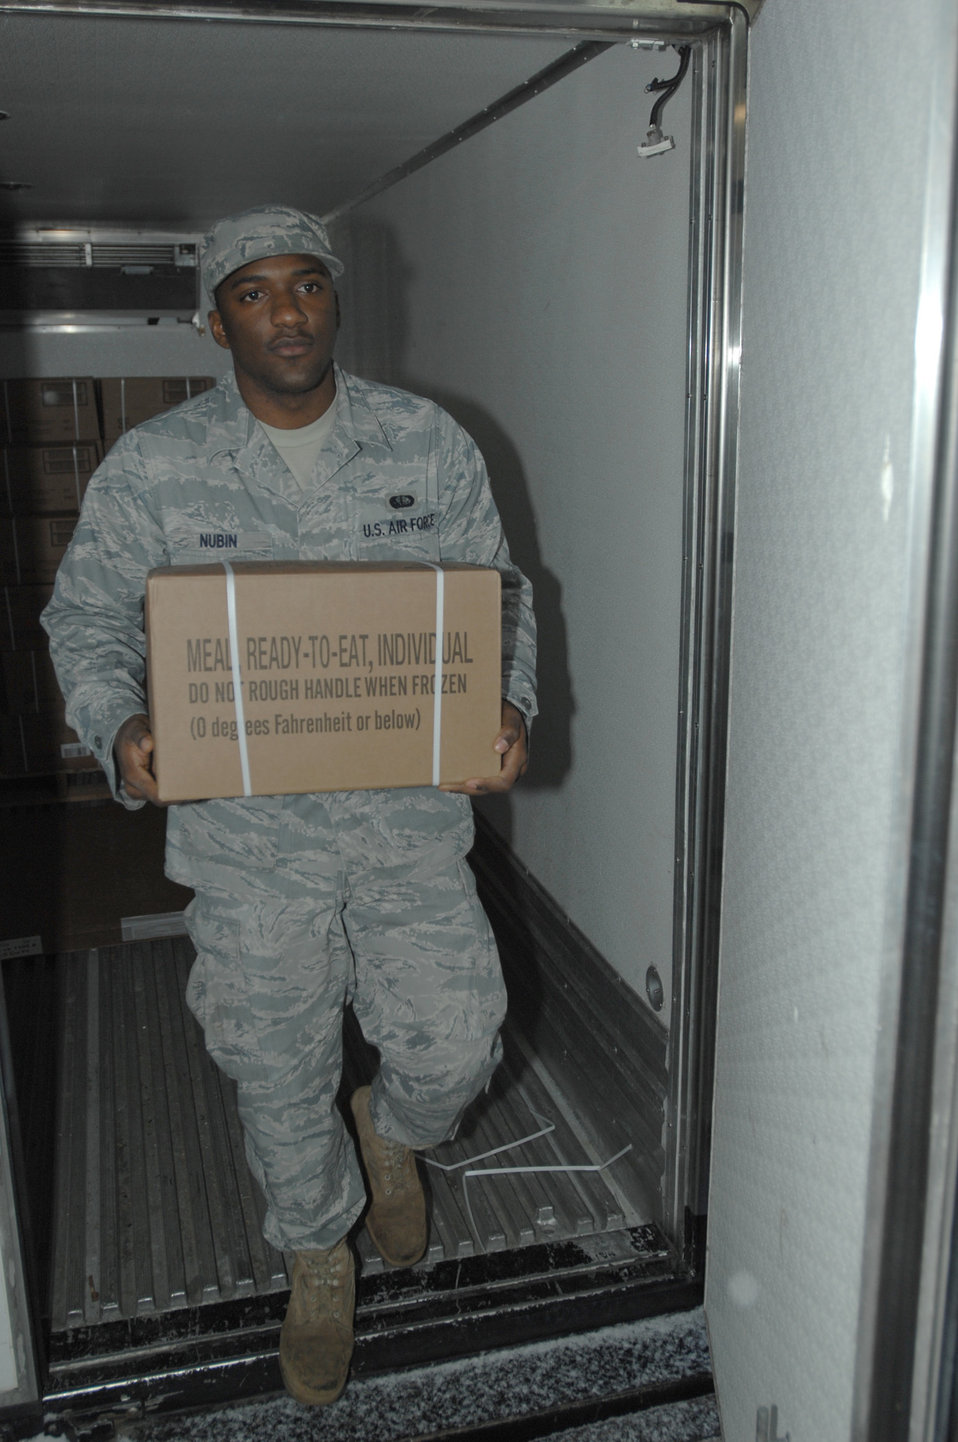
Meals Ready-to-Eat

MISAWA AIR BASE, Japan (March 12, 2011) - Senior Airman Stephen Nubin unloads boxes of Meals Ready-to-Eat (MREs) at the Grissom Dining Facility here, March 12, 2011. The dining facility has already handed out more than 1,500 MREs to base personnel and their family members following the 8.9-magnitude earthquake that impacted Japan and triggered a tsunami that devastated several of the country's coastal areas. No injuries or major facility damage was reported at this U.S. military installation located in northern Japan. U.S.